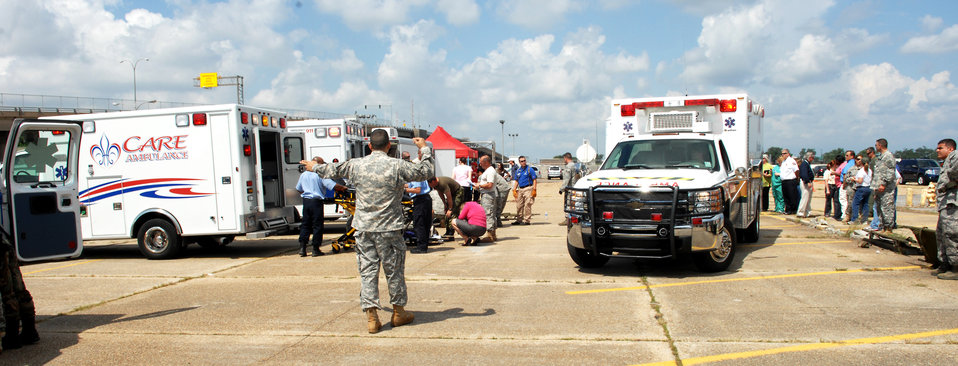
State, federal teams prepare for hurricane season

Ambulances from local hospitals pull up next to the disaster aeromedical staging facility to offload simulated patients during an evacuation exercise May 20, 2010, at the New Orleans Lakefront Airport, La. The exercise was controlled by officials from the Louisiana Department of Health and Hospitals with the help of multiple military counterparts including Air Mobility Command and U.S. Transportation Command members from Scott Air Force Base, Ill.